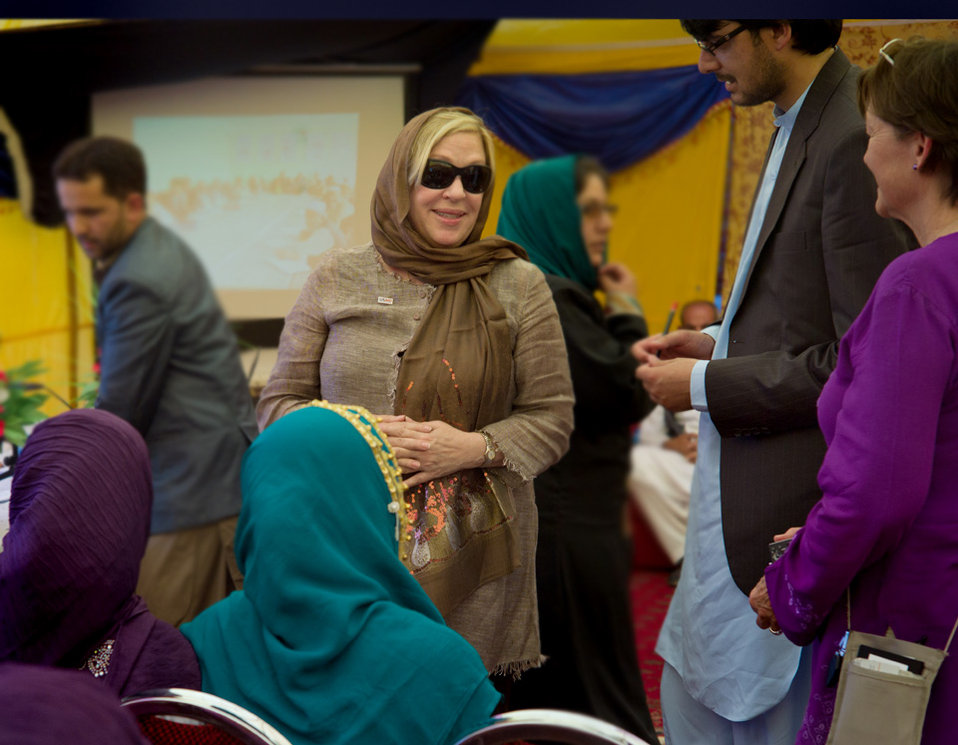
Carol talking to graduates 1